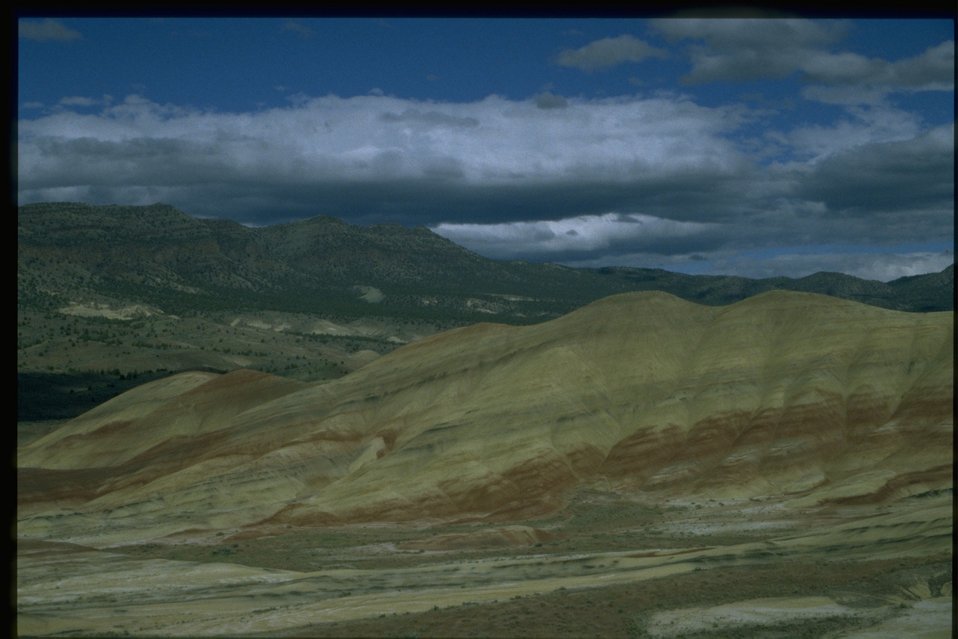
Painted Hills National Monument (Mitchell, Oregon).